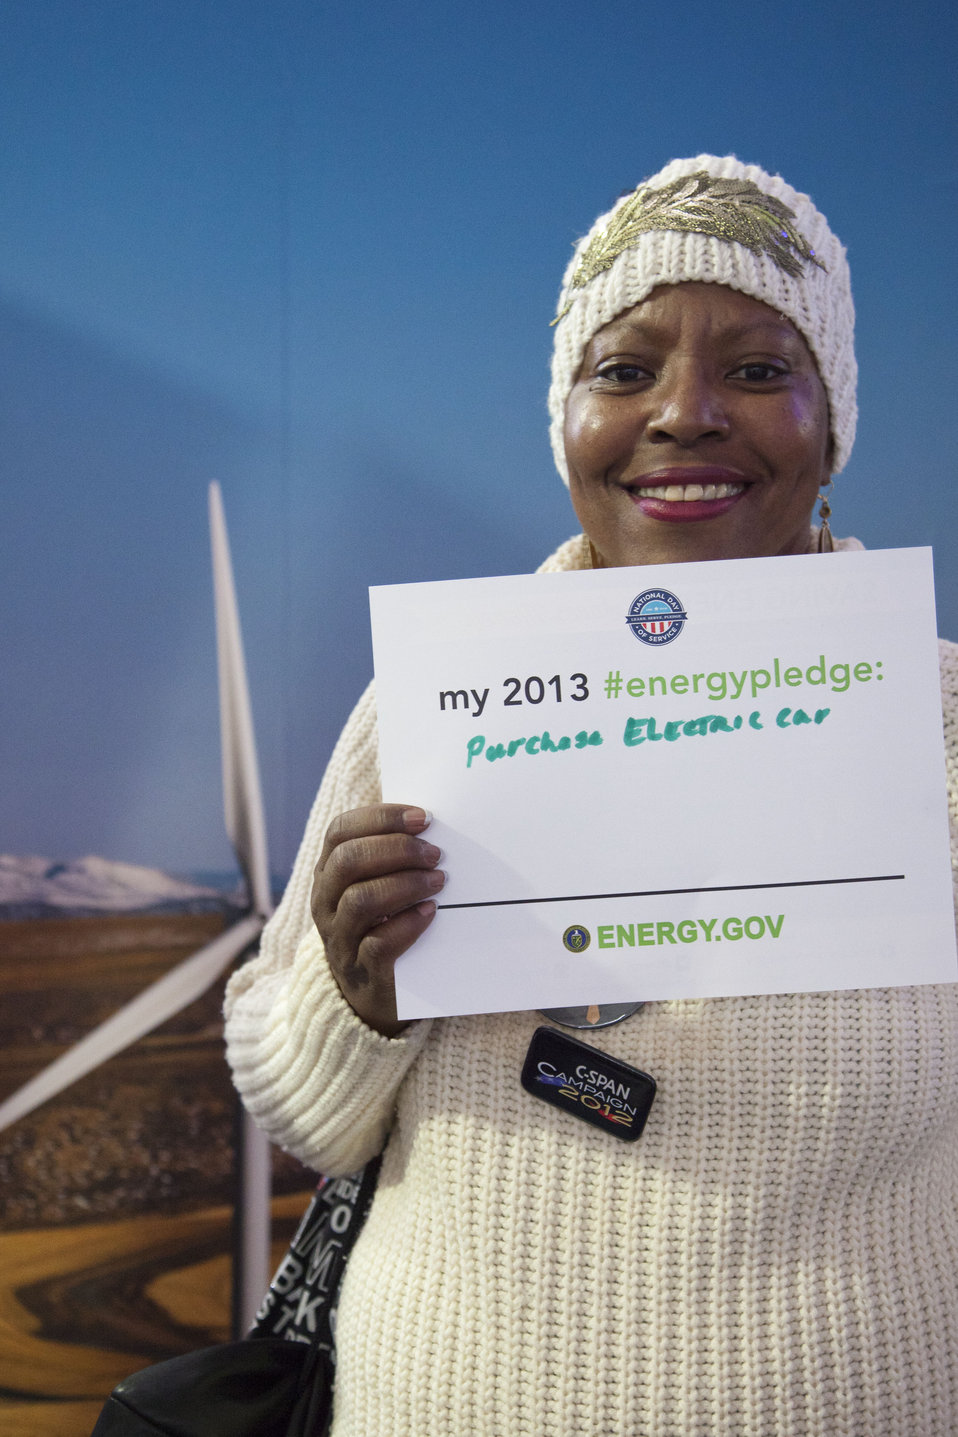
What's your #energypledge?